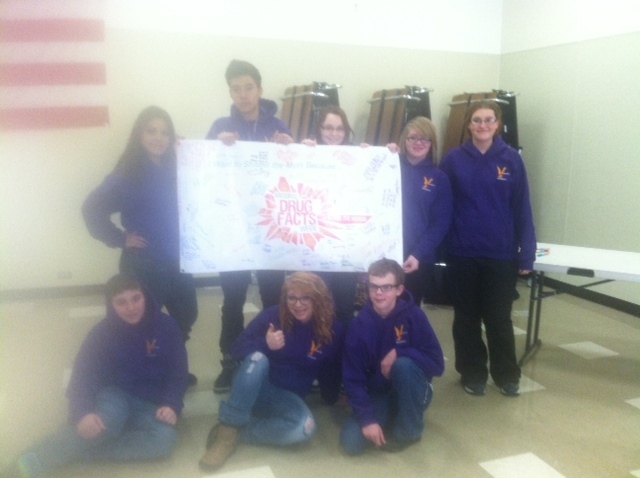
Shattering the Myths in Idaho

South Central Public Health provided activities at Mt. Harrison High School during NIDA's National Drug Facts Week in Heyburn, Idaho.
Teenagers from Mt. Harrison High School joined forces with other teens and scientists across the United States as part of the event.